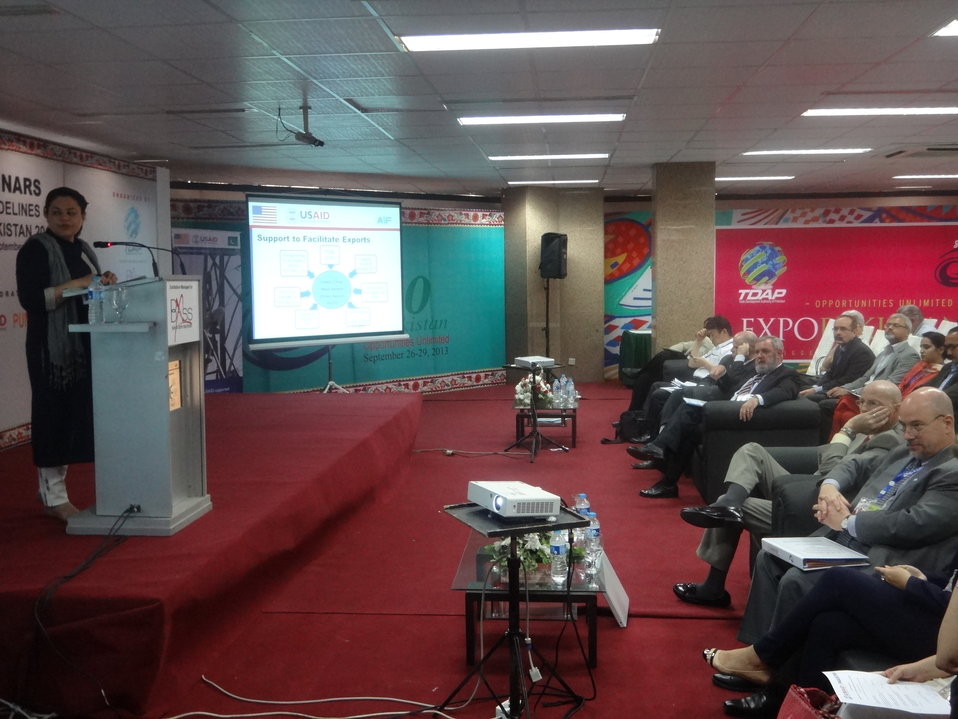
The Agribusiness Project, Presentation at Conference, TDAP Expo, Karachi, September 27, 2013 (13)